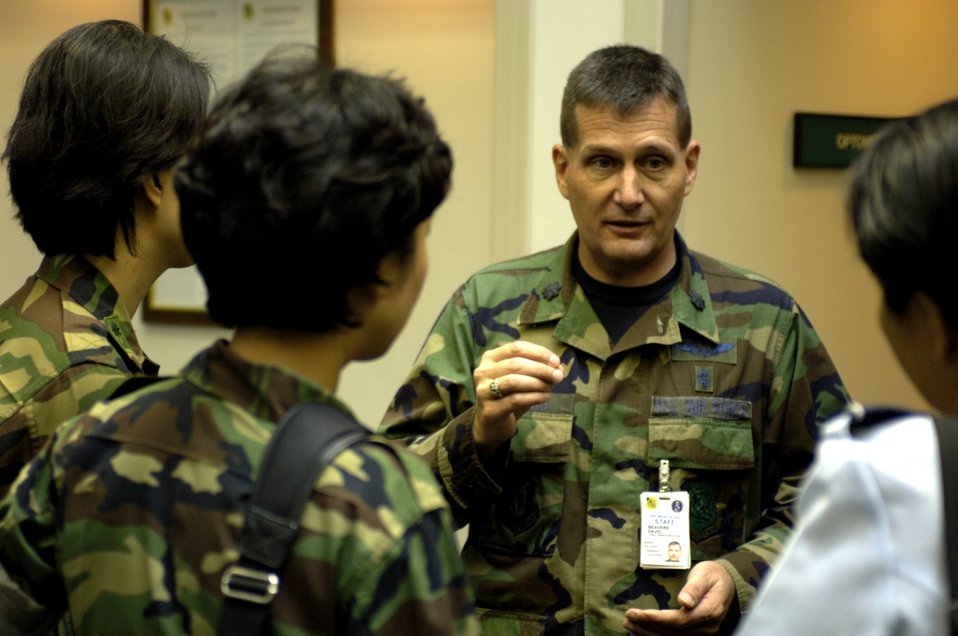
Korean nurses visit Hickam to exchange ideas

Lt. Col. David Beavers explains the operation of the William R. Schick Clinic to four visiting South Korean Air Force nurses at Hickam Air Force Base, Hawaii, on Tuesday, April 25, 2006. South Korea sent seven nurses to the island to discuss mass casualty response, civil-military coordination and biohazard response procedures for natural disaster management. The colonel is the chief nurse at the clinic and is assigned to the 15th Medical Group.